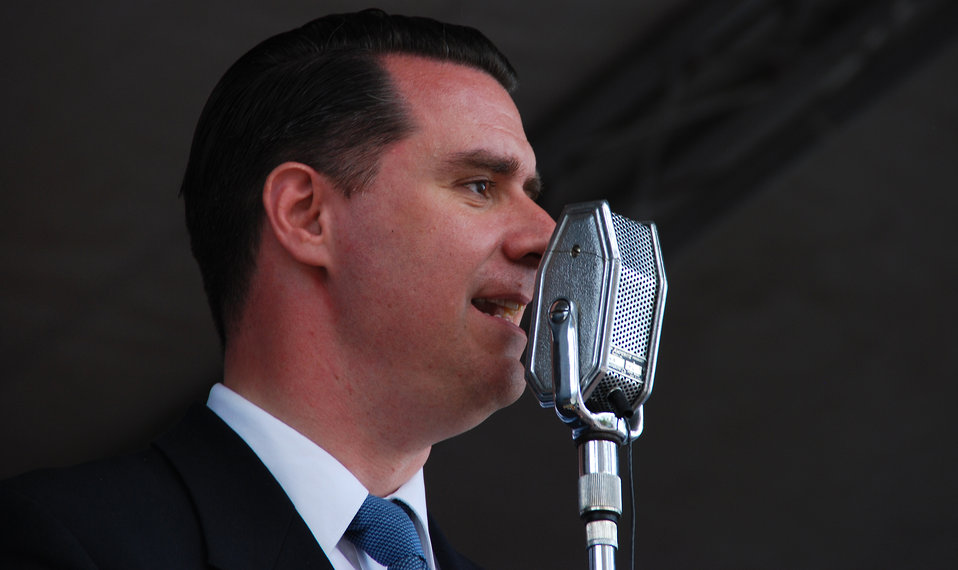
Andrej Hermlin, Deutscher Pianist und Bandleader